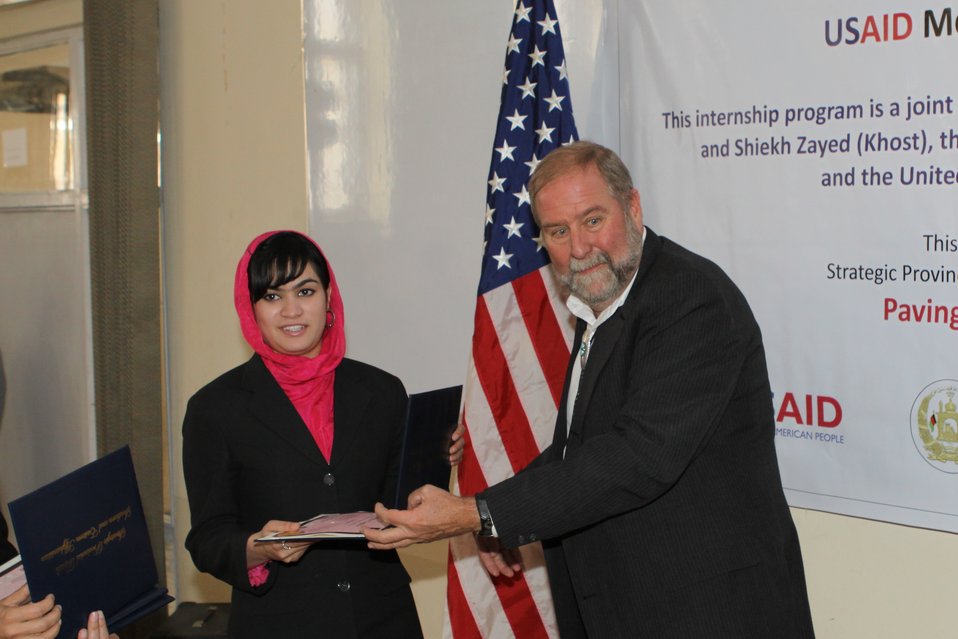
Female University Students Complete Internship

Kabul, Afghanistan | March 16, 2011 – In response to a demand for qualified Afghan engineers, Kabul University celebrated completion of an intensive five-month Mentor Protégé Training Program today by 10 female fourth year university students. The Training Program is a joint effort between the Government of the Islamic Republic of Afghanistan, the U.S. Agency for International Development (USAID), and the Universities of Kabul, Kandahar, Alberoony in Kapisa, Shiekh Zayed in Khost. The graduation ceremony highlighted collaboration with these national institutions in building the technical skills of young Afghans, made possible by USAID.

Four of the interns are engineers, while the remaining six are from the faculties of computer science, economics, and psychology.

Speaking about the event, H.E. Minister of Public Works Abdul Qudus Hamidi said, “The future of Afghanistan lies in developing the skills of our youth, and the engineering skills of these graduates today represent a small but important step forward for the country.”

Keynote speakers at the ceremony included H.E. Deputy Minister of Higher Education Abdul Rahim; USAID Senior Deputy Mission Director Robert Hellyer; and Chancellor of Kabul University Professor Hamidullah Amin. Approximately 150 people, including current and former students attended the graduation.

Launched last year, the Mentor Protégé Training Program has provided qualifying students the opportunity to intern with USAID’s Strategic Provincial Roads-South and East Afghanistan project and gain practical experience in a real work environment. The goal of the program was to offer interns the opportunity to gain hands-on experience to reinforce their formal studies. A total of 30 students from four national universities have benefitted from this program.

“The promotion of women’s rights is integrated into the overall U.S. Government development strategy and can be found in key programs, including education, healthcare, security, rule of law, political participation, agriculture, and economic development,” said Robert Hellyer. “The U.S. Government is committed to the Afghan leadership of programs that directly enhance development, particularly as it relates to women’s issues.”

This event also highlighted the learning achievements of students and emphasized the importance of hands-on internship programs. The curriculum is designed to instill students with the knowledge and confidence to qualify for engineering positions upon completion of their fourth year at their respective universities.